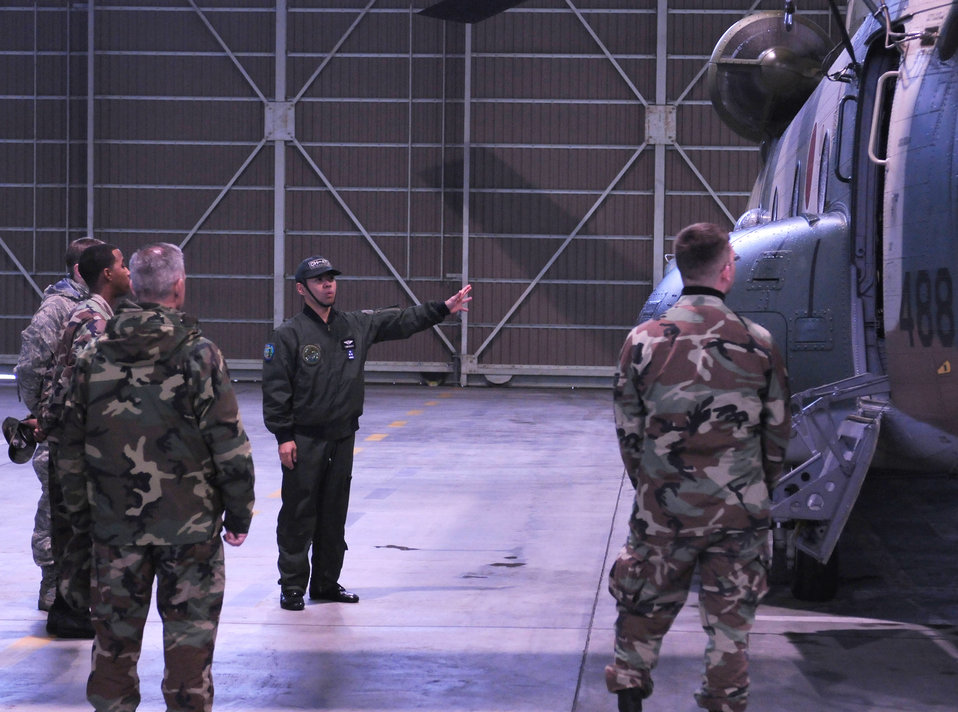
Yokota Airmen strengthen bonds with Japanese military

A Japanese Air Self Defense Force pilot briefs American Airmen of the 374th Maintenance Group on the capabilities of the CH-47J helicopter Dec. 17 at Yokota Air Base, Japan. Members of the 374th Airlift Wing and Japanese Air Self Defense Force participate in these events to find out how each operates and maintains their aircraft.